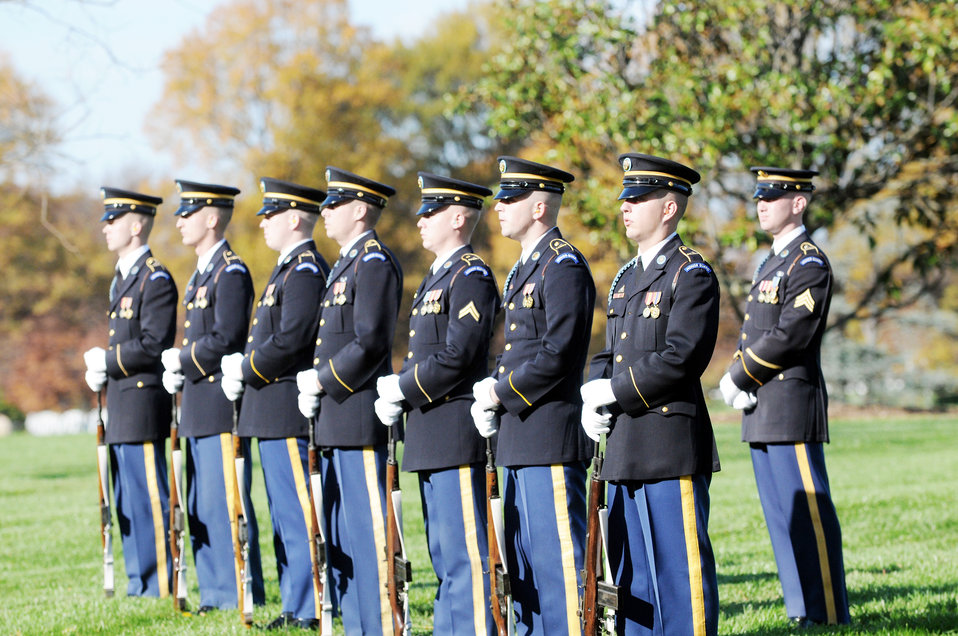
Funeral highlights search for missing servicemembers

Members of the Army Ceremonial Honor Guard prepare for a rifle volley for members of the World War II B-25 aircrew that was lost Dec. 5, 1942, near Papua, New Guinea, during an interment ceremony at Arlington National Cemetary in Virginia.